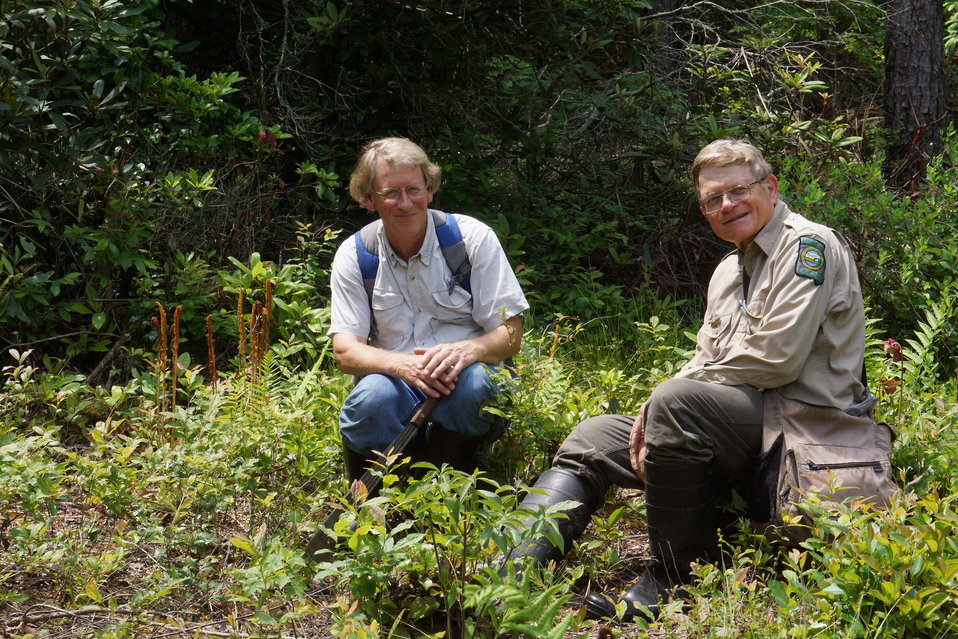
Ron Determann and Tom Patrick

In May, bog conservationists from Tennessee, North Carolina, and Georgia convened in the north Georgia mountains for the spring, 2014 meeting of the Bog Learning Network. The event provided an opportunity for biologists to see, first hand, the result of management efforts at two north Georgia bogs. More importantly, the outings provided an opportunity to share innovative approaches to bog management, such as the role of the Georgia Plant Conservation Alliance in conserving rare plants and coordinating a cadre of volunteers to work on bog management.

The Bog Learning Network was convened in the winter of 2013 as a way to bring together people working for bog conservation across the Southern Appalachians. Southern Appalachian bogs are one of North America’s rarest habitats and home to many rare plants and animals.